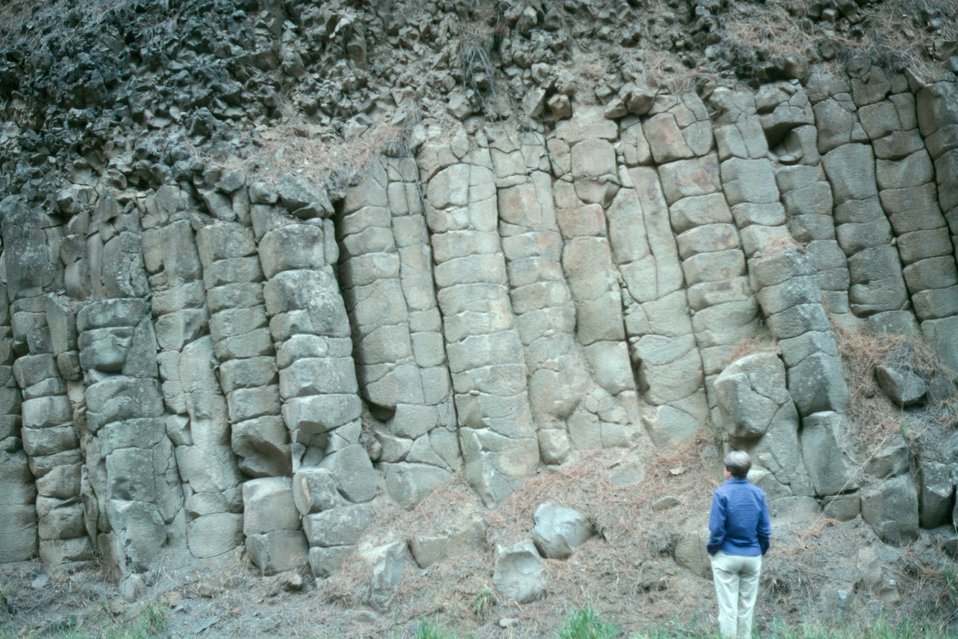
Basalt columns with fractures Four Rivers LSRD Lower Snake River District